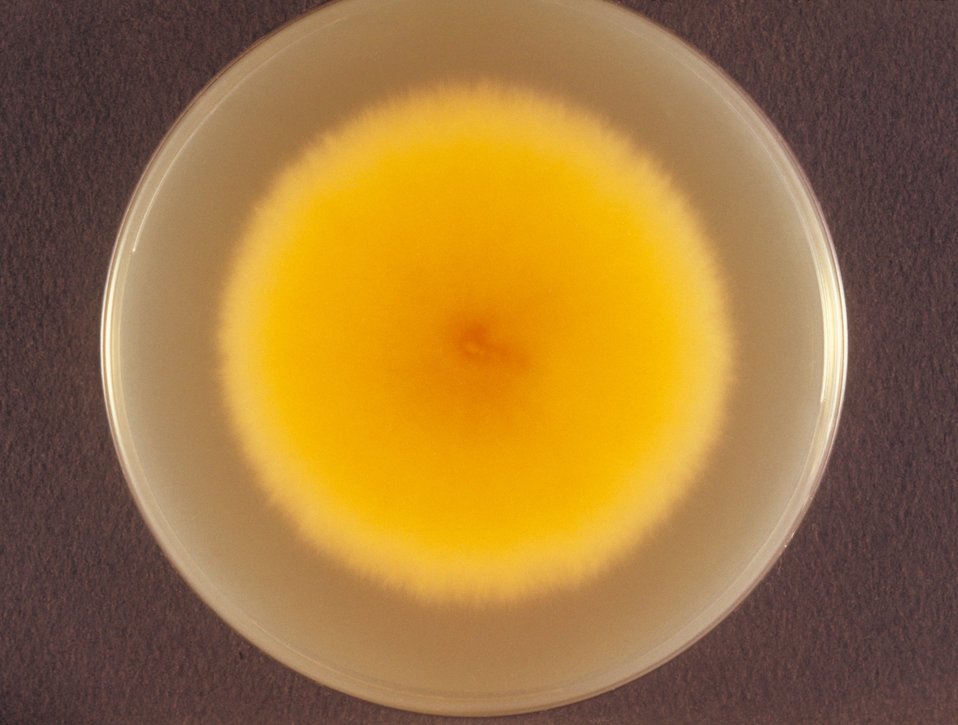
This is the bottom or reverse view of a cereal agar plate culture growing the fungus Microsporum persicolor.